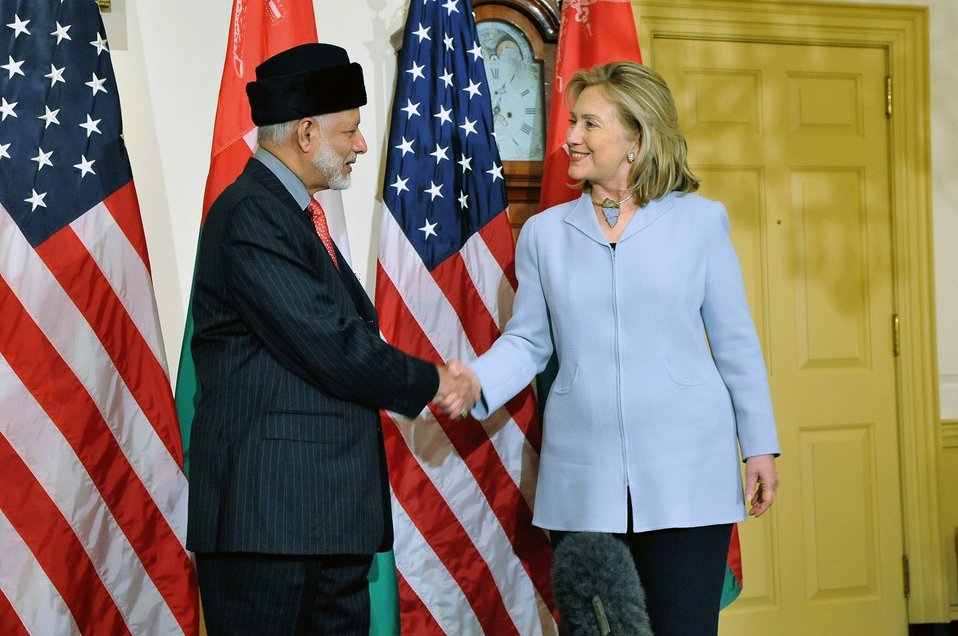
Secretary Clinton Hosts a Working Lunch for Yusuf bin Alawi bin Abudllah

U.S. Secretary of State Hillary Rodham Clinton hosts a working lunch for Yusuf bin Alawi bin Abdullah, Minister Responsible for Foreign Affairs of the Sultanate of Oman, at the U.S. Department of State in Washington, D.C., on April 28, 2011.